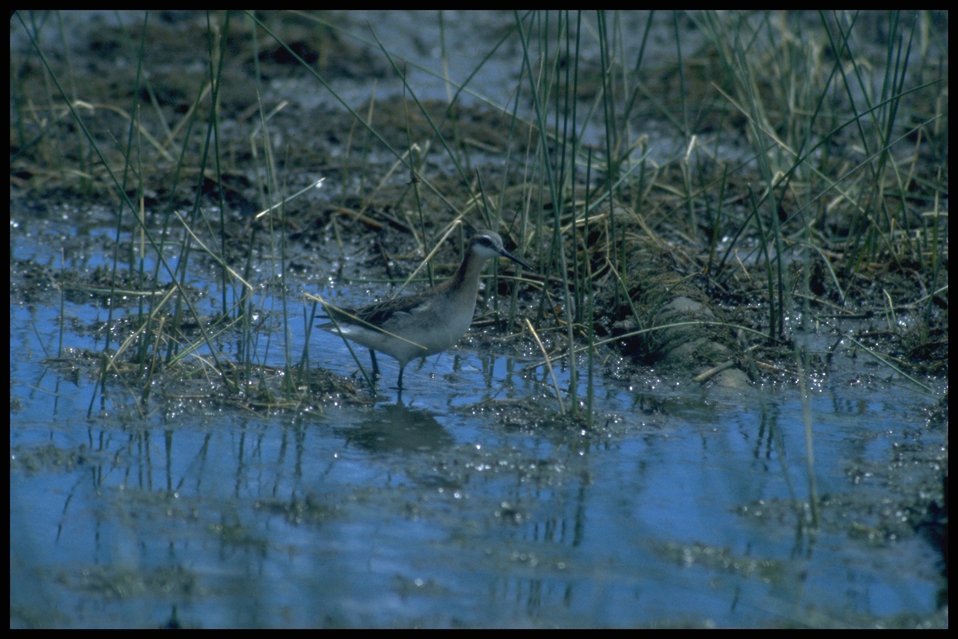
Mountain Plover, Lakeview District.